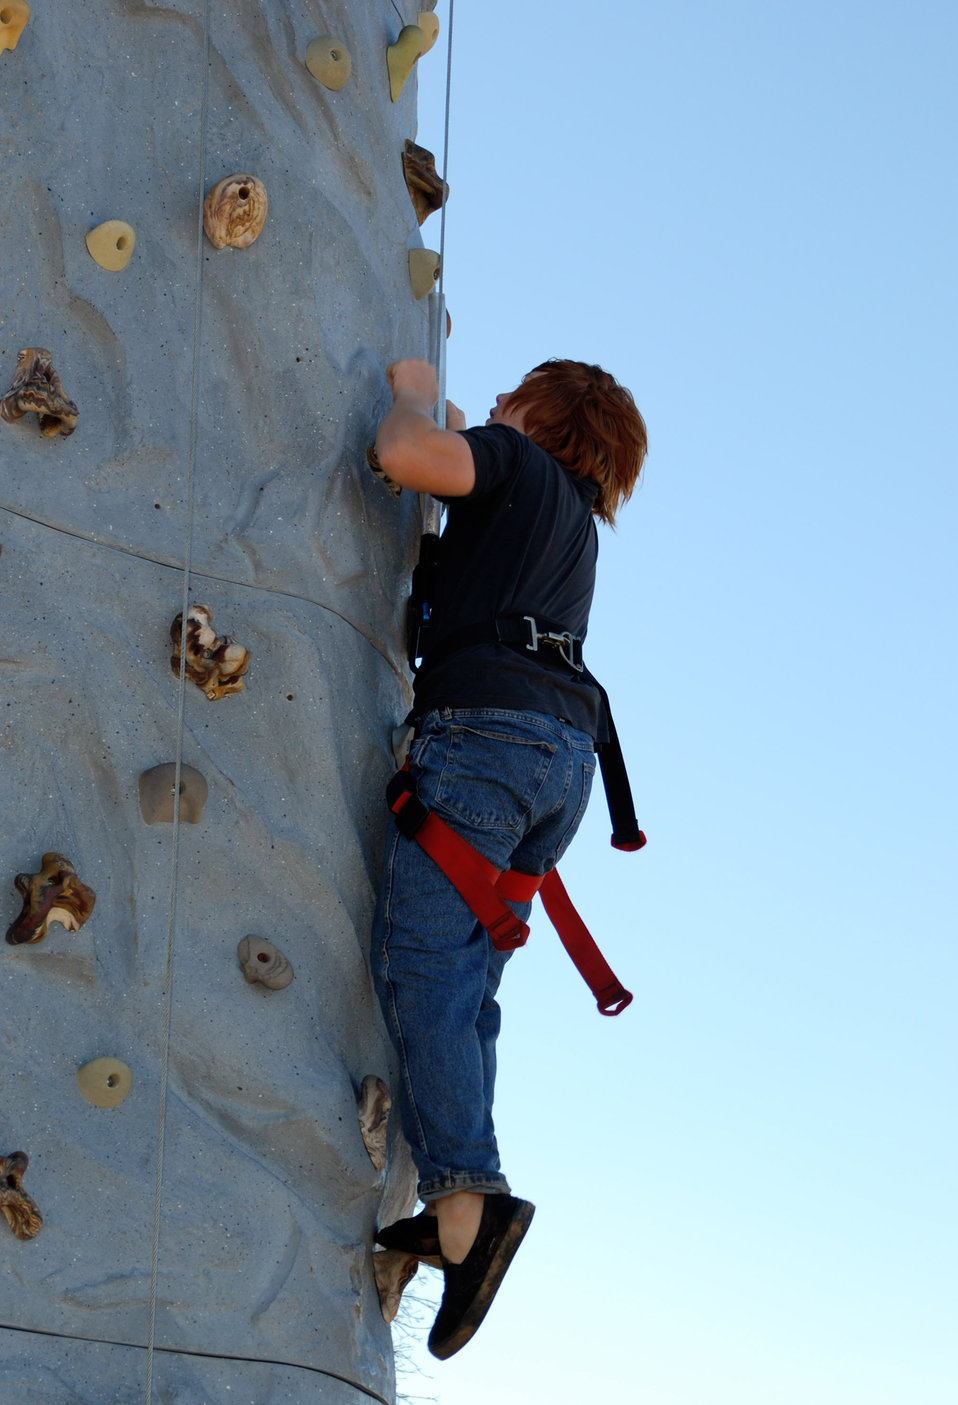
Beale hosts Boy Scout expo

Sam Hazelet, 12, a Boy Scout with Troop 63, climbs up a rock wall during the 2007 Boy Scout Expo Sept. 29 at Beale Air Force Base, Calif.